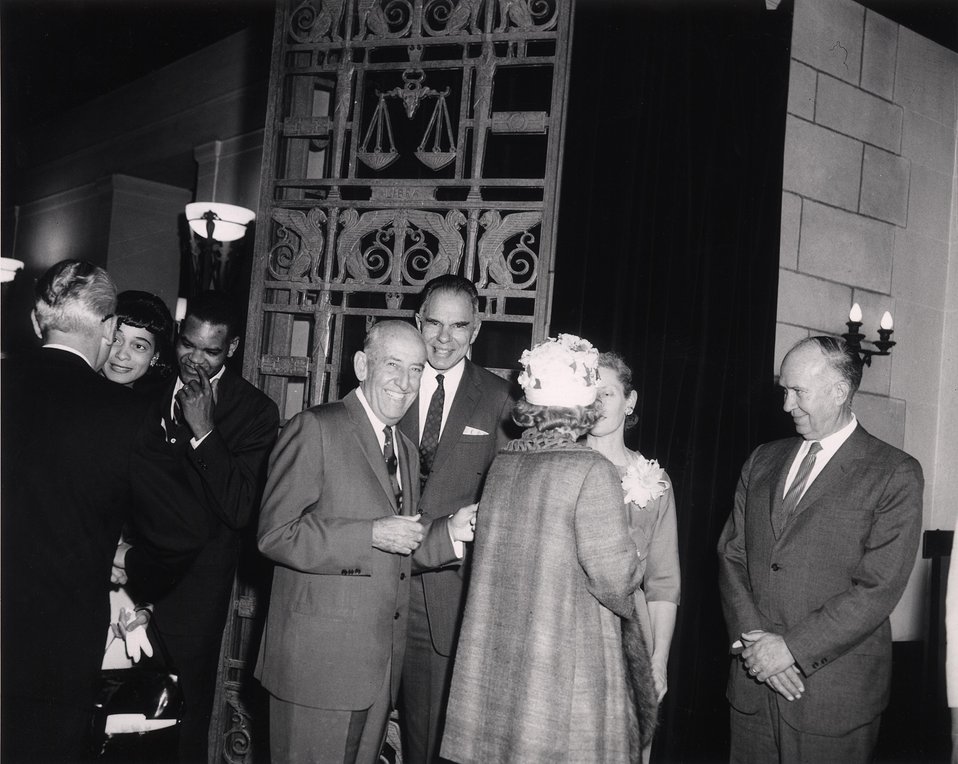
E. O . Lawrence Award Ceremony. National Academy of Sciences. April 29, 1965. Mr. McCool, Mr. and Mrs. Little, Mr. and Mrs. LeBaron, Dr. and Mrs. Seaborg Dr. John Lawrence.